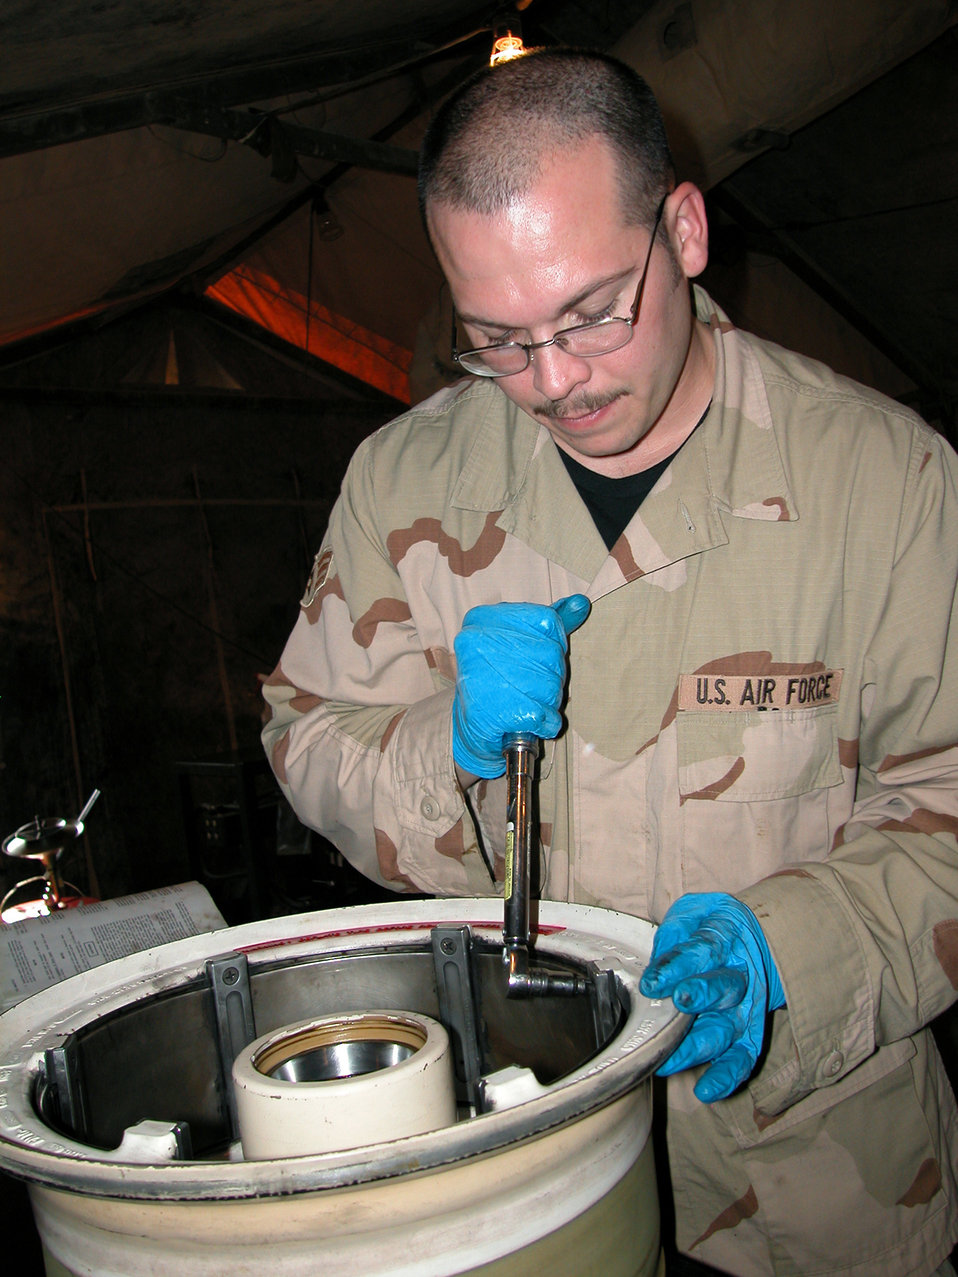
Transient alert maintainers provide critical mission support

Senior Airman Samuel Shock works on an F-16 Fighting Falcon wheel March 20 in the 332nd Expeditionary Maintenance Squadron's Crash Recovery, Wheel and Tire shop at Balad Air Base, Iraq. Airmen in the shop work on about 30 wheels a week. Airman Shock is deployed from the 31st Maintenance Squadron, Aviano AB, Italy.